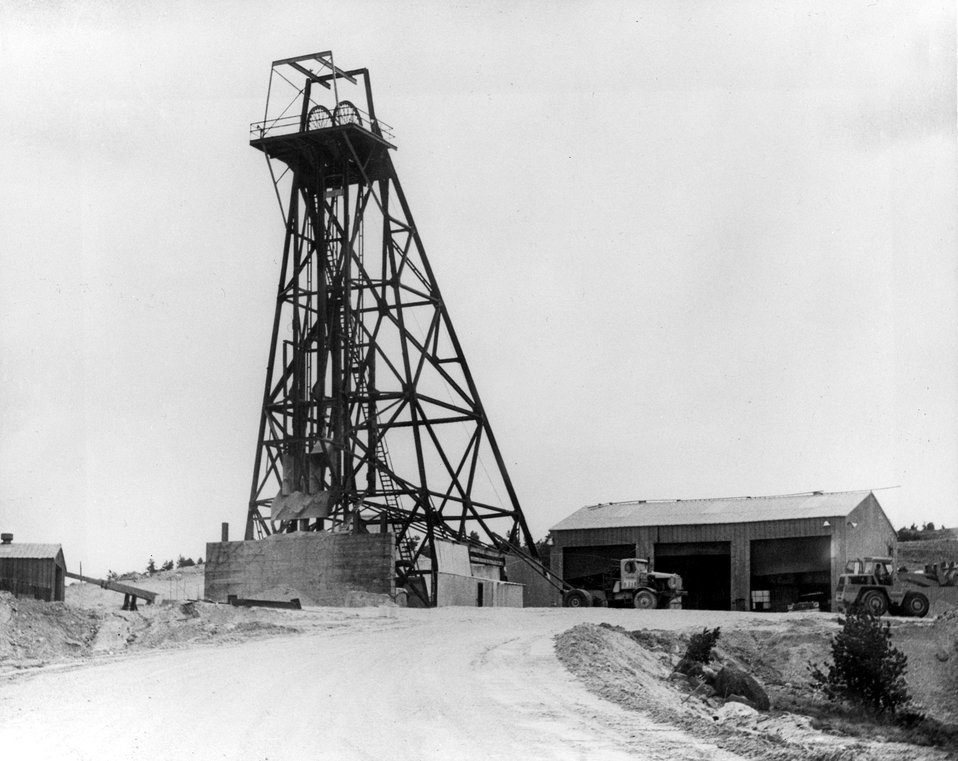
The Seismic mine, located near Jeffrey City, Wyoming, one of the uranium mines of the Western Nuclear Inc. c. 1976